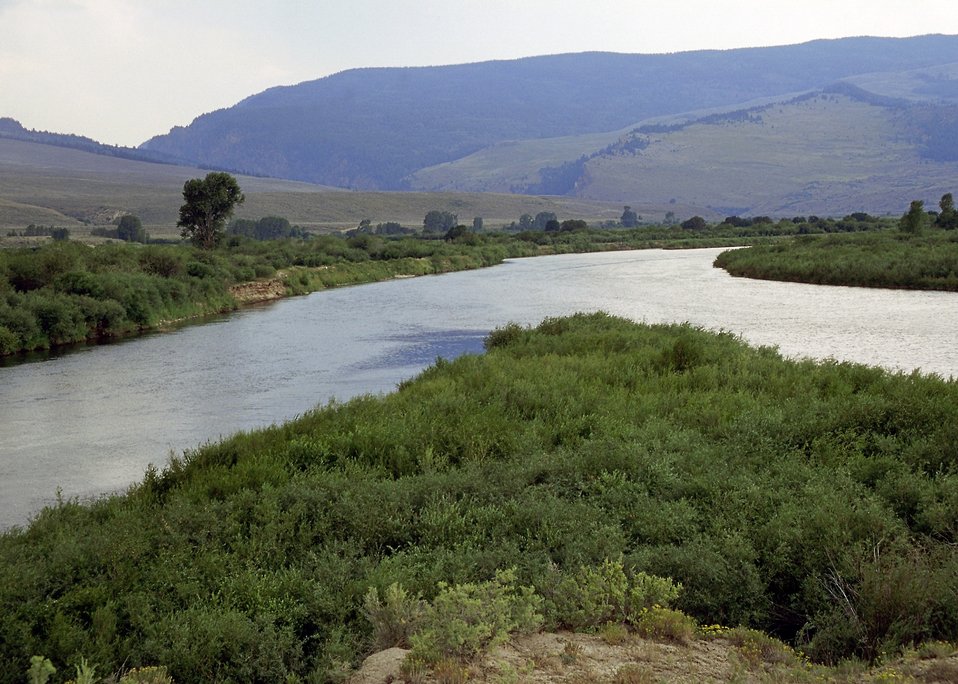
Confluence Blu/Coco Rivers